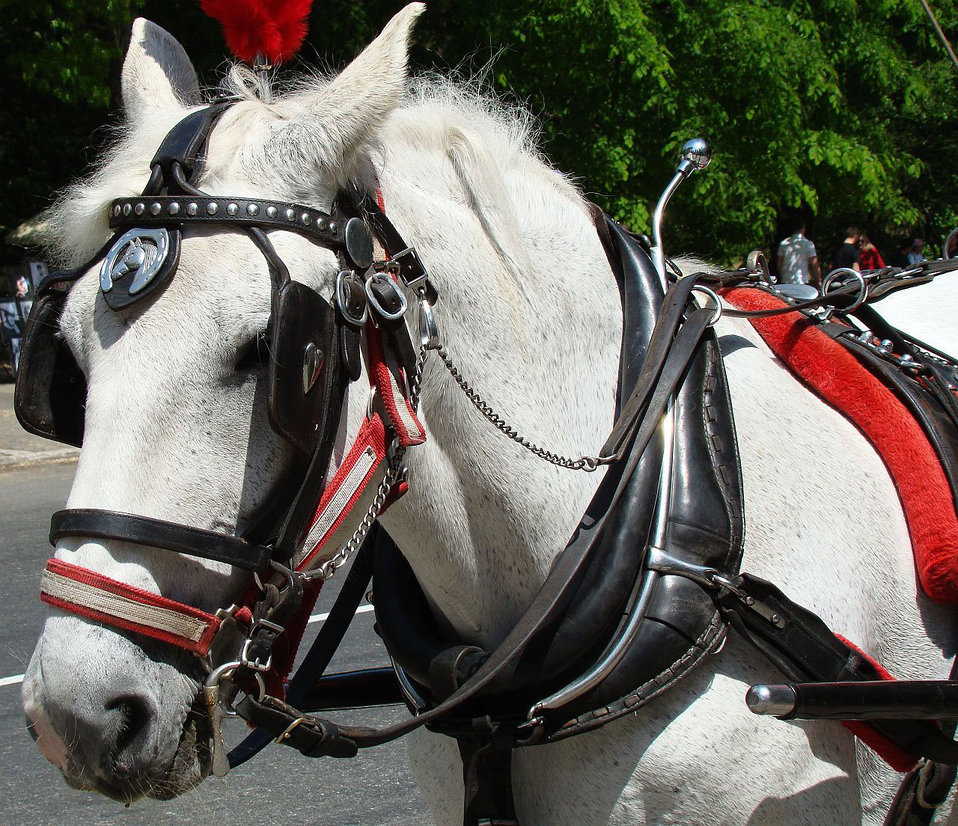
Horse portrait.